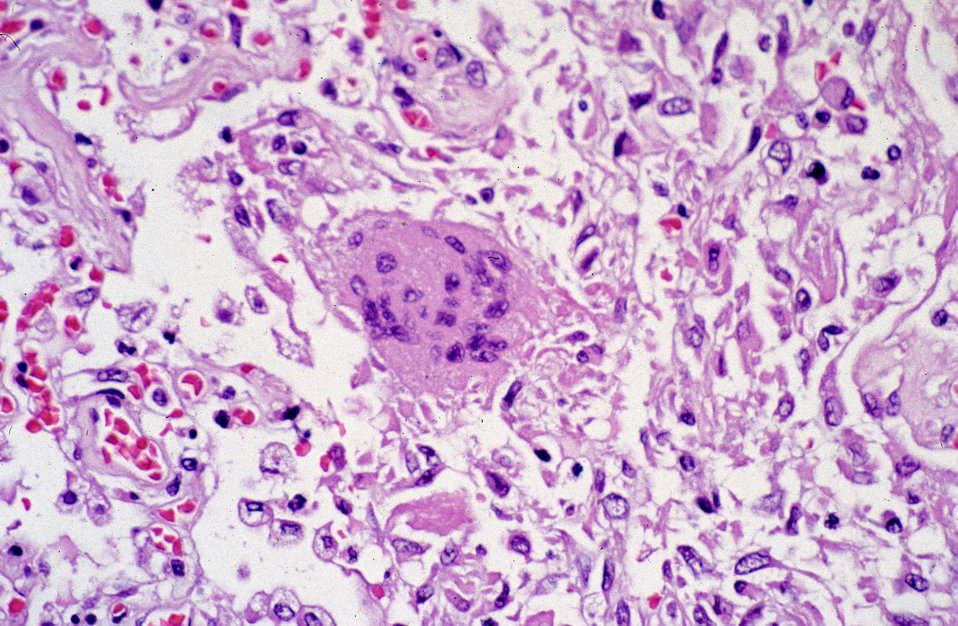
This photomicrograph reveals lung tissue pathology due to SARS.